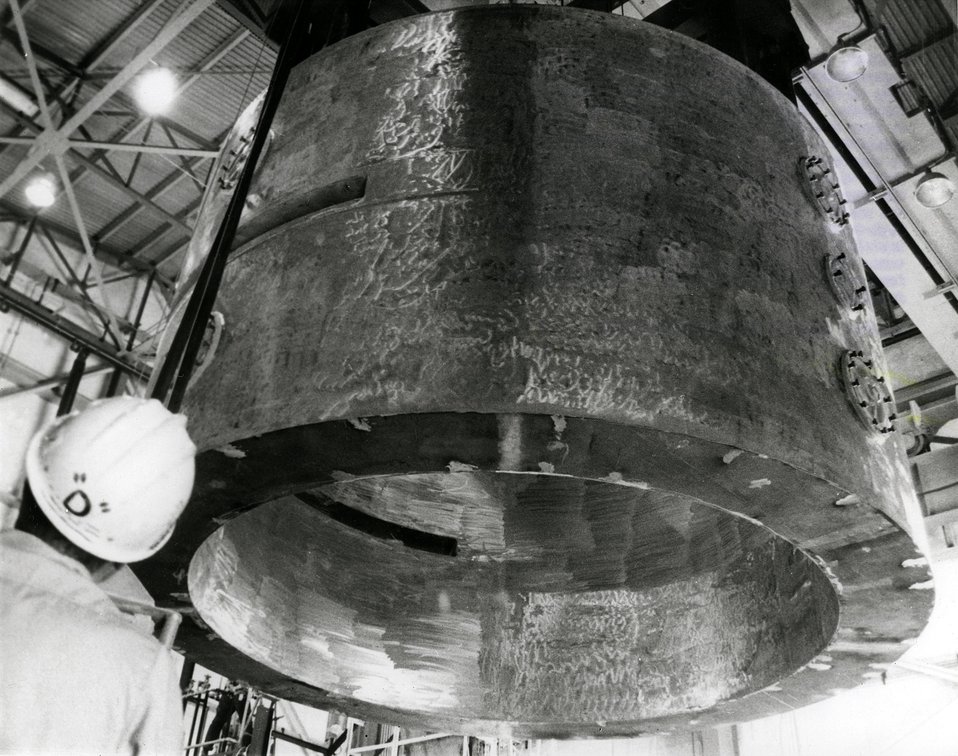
Coils of the world's largest superconducting magnet are lowered into their steel yoke at Argonne.
c.1969